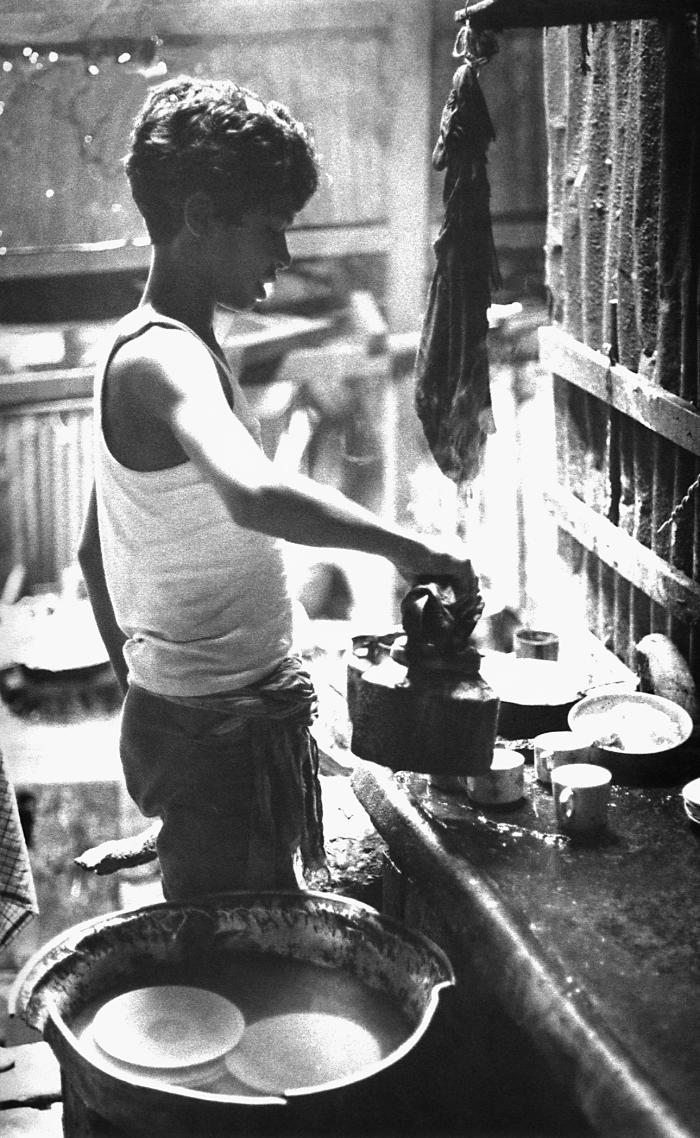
This image depicted a Bangladesh boy as he was pouring tea in a restaurant setting. This photograph provided by Dr. Stan Foster, and captured by Pierre Claquin, M.D., B.A.C., who at the time was a member of the World Health Organization's Smallpox Eradication Program. It was part of a series photographed by former E.I.S. officer, Stanley O. Foster M.D., M.P.H., and was one of a series entitled 'The Story of One Smallpox Jeep', which depicted the travails faced by the jeep, and its occupants of public health practitioners, as they road through the Bangladesh countryside in an attempt to eradicate smallpox from the country.